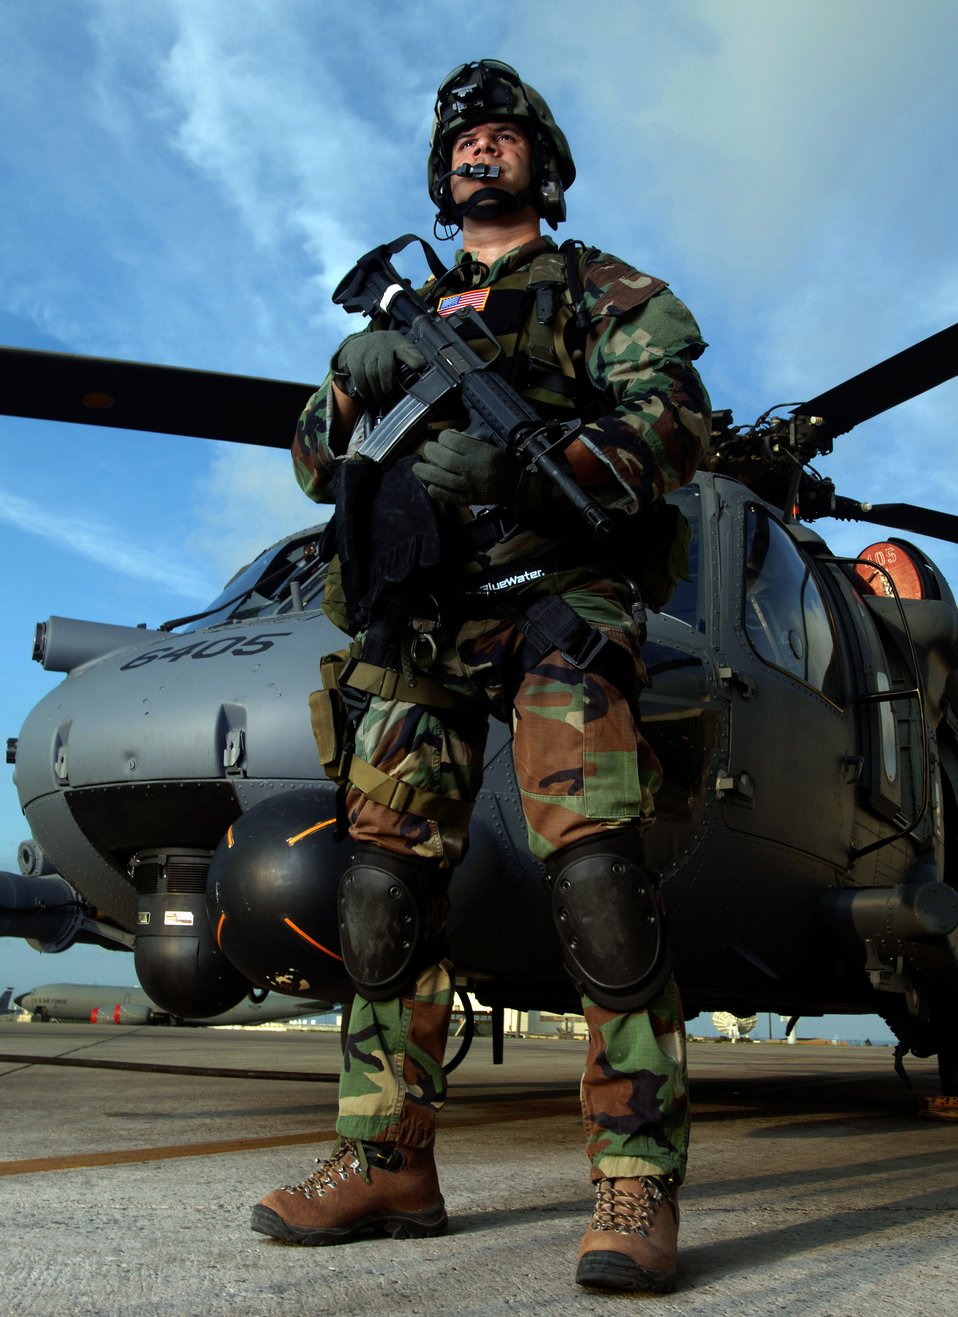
Train now, save later

KADENA AIR BASE, Japan -- Staff Sgt. J. Pierre Griffin observes flightline activities during training here. The 31st Rescue Squadron trains, equips and employs combat-ready pararescuemen worldwide. They also use any means available to provide combat and humanitarian search and rescue and medical assistance in all environments. Sergeant Griffin is a pararescueman from the 31st RQS here.